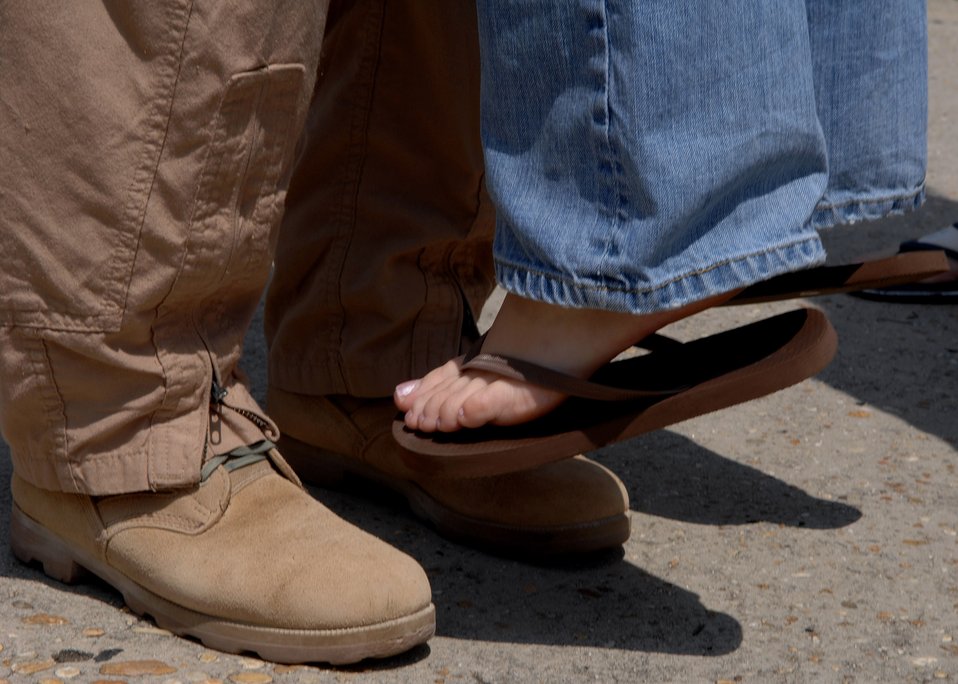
Welcome home!

An Airman of the 823rd Security Forces Squadron lifts a loved one from the ground during a hug April 29 at Moody Air Force Base, Ga. Members of the 823rd SFS returned from a six-month deployment to Camp Bucca, Iraq.